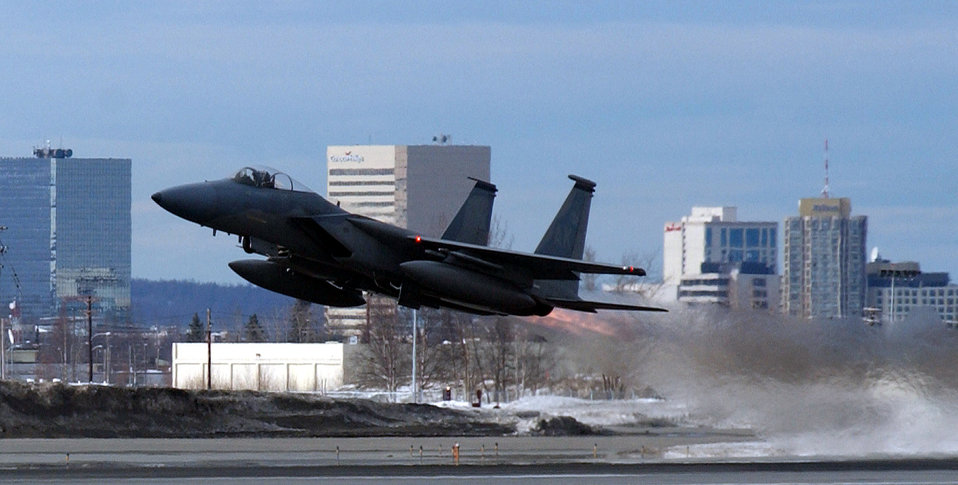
Flaming eagle

ELMENDORF AIR FORCE BASE, Alaska -- An F-15 Eagle takes off during an operational readiness inspection here April 6. The F-15 is assigned to the 19th Fighter Squadron.